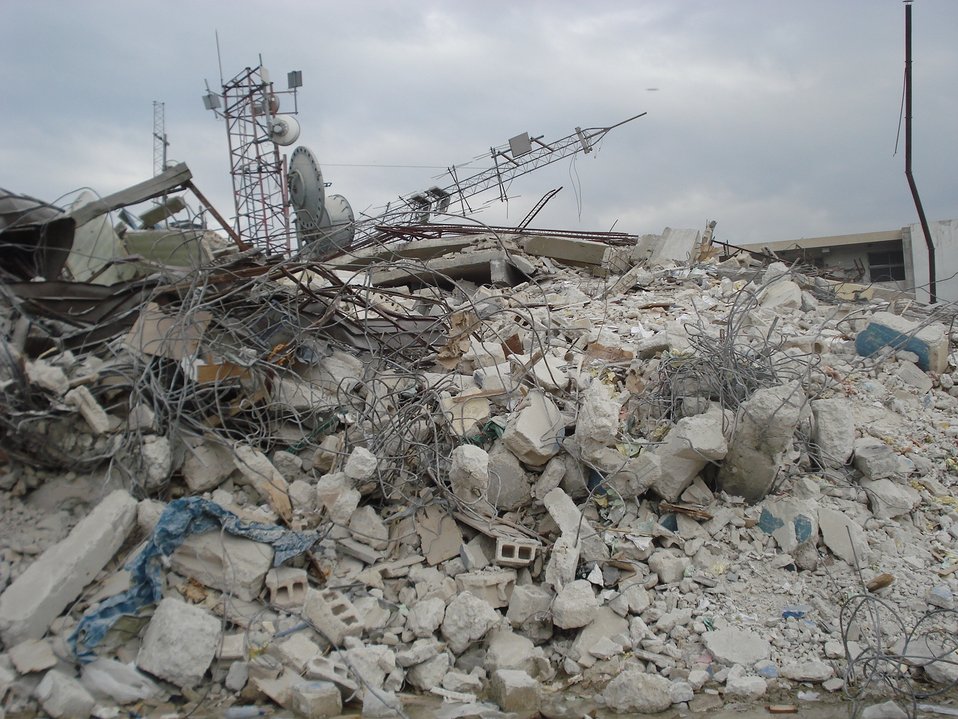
Teleco Building (Haiti Earthquake - 2010)

Photos shot by team sent by the FCC to assist communications recovery in Haiti. Photos shot by team sent by the FCC to assist communications recovery in Haiti.